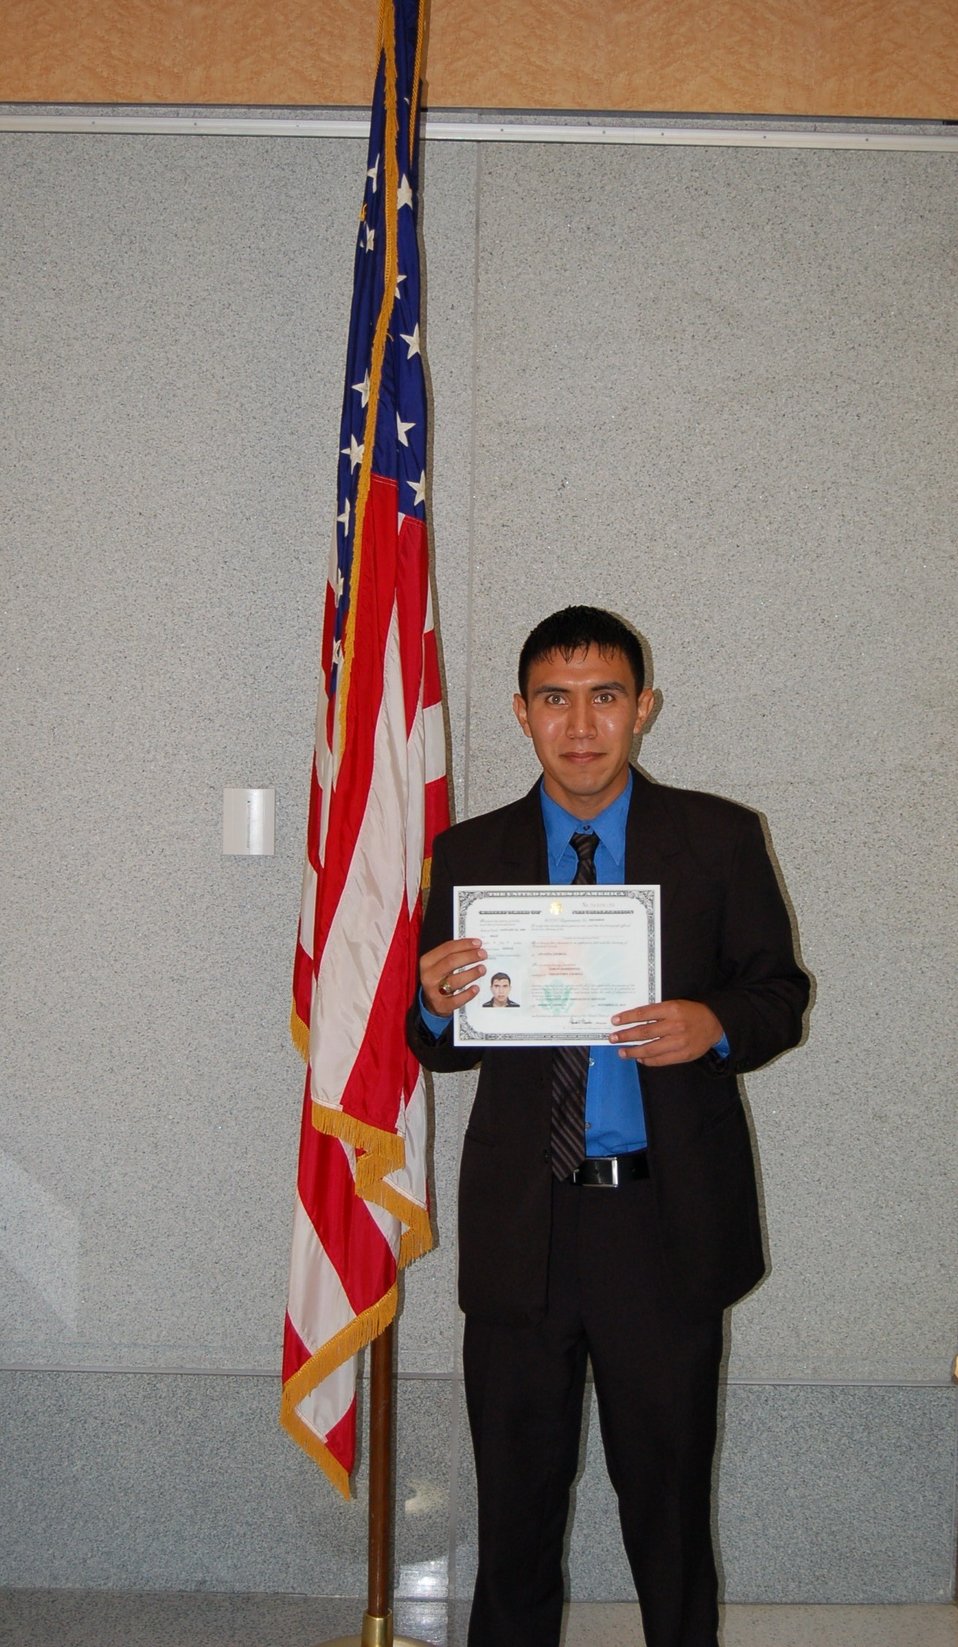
New Citizens